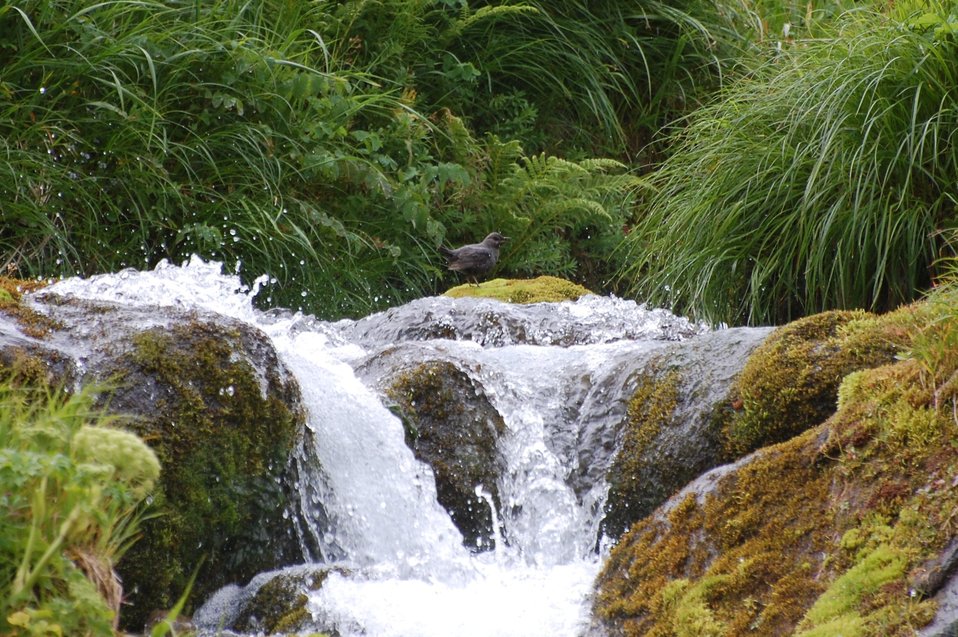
American Dipper

Wilderness near Frosty Peak, Izembek National Wildlife Refuge
Photo by Kristine Sowl,
USFWS, Public Domain